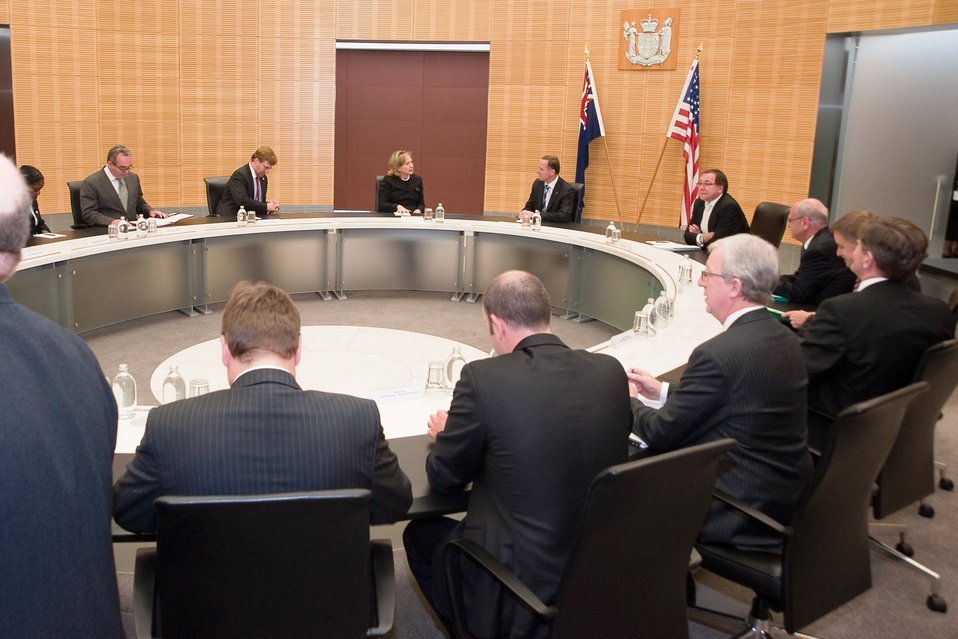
Secretary Clinton Participates in a Bilateral Meeting With New Zealand Prime Minister Key

U.S. Secretary of State Hillary Rodham Clinton participates in a bilateral meeting with New Zealand Prime Minister John Key in Wellington, New Zealand, on November 4, 2010. Other individuals in the photo include: U.S. Assistant Secretary of State for East Asian and Pacific Affairs Kurt C. Campbell (second left of the Secretary), U.S. Ambassador to New Zealand David Huebner (left of the Secretary), and New Zealand Foreign Minister Murray McCully (right of the Prime Minister).